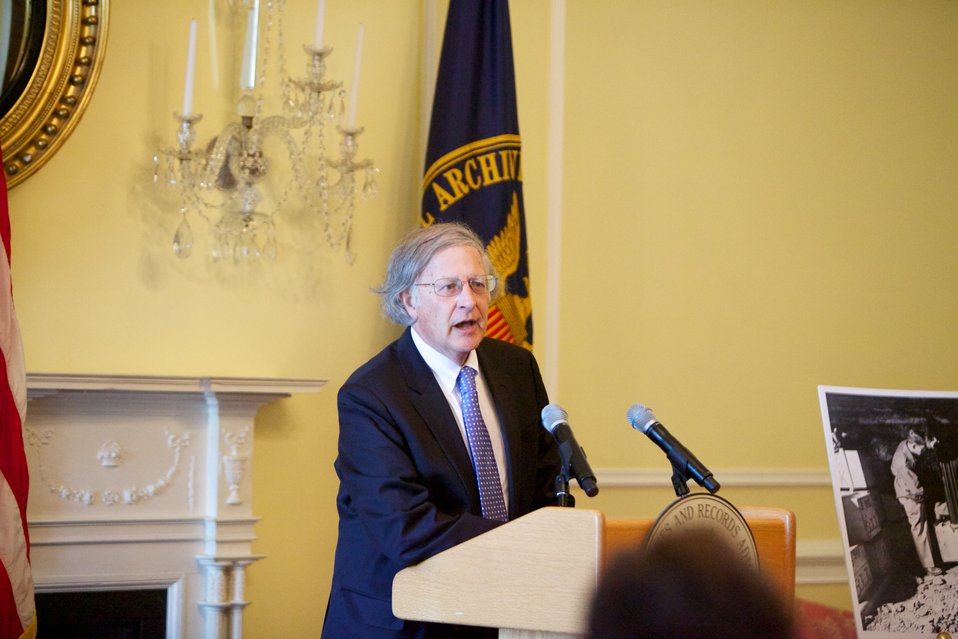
Hitler Album Donation Event